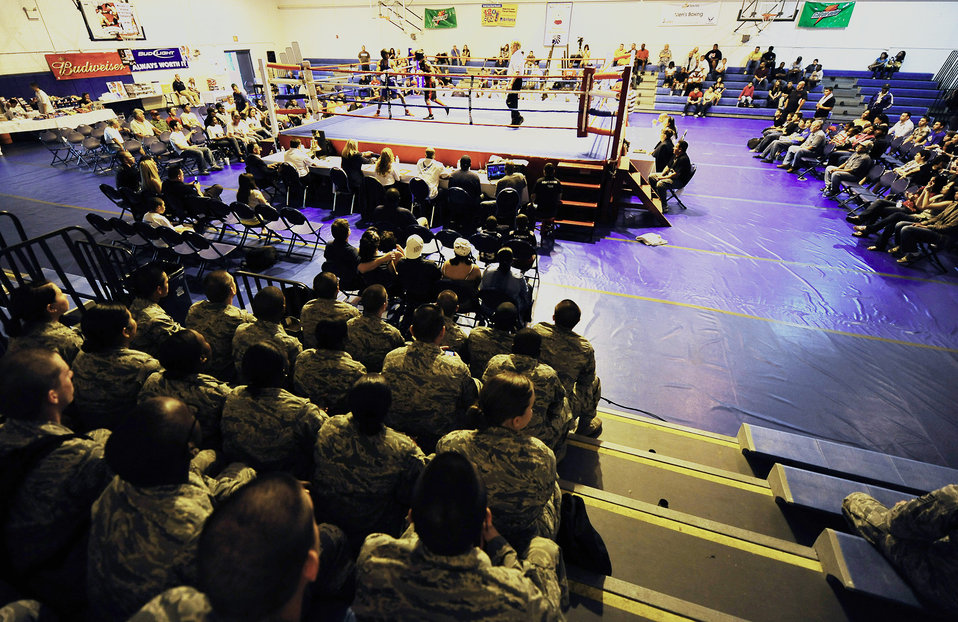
Contenders box for a spot

Spectators watch the military athletes compete in the Air Force Boxing Championships at the Bennett Fitness Center at Lackland Air Force Base, Texas, April 3, 2010. Airmen competing for a spot on the Air Force boxing team showcased their talents.